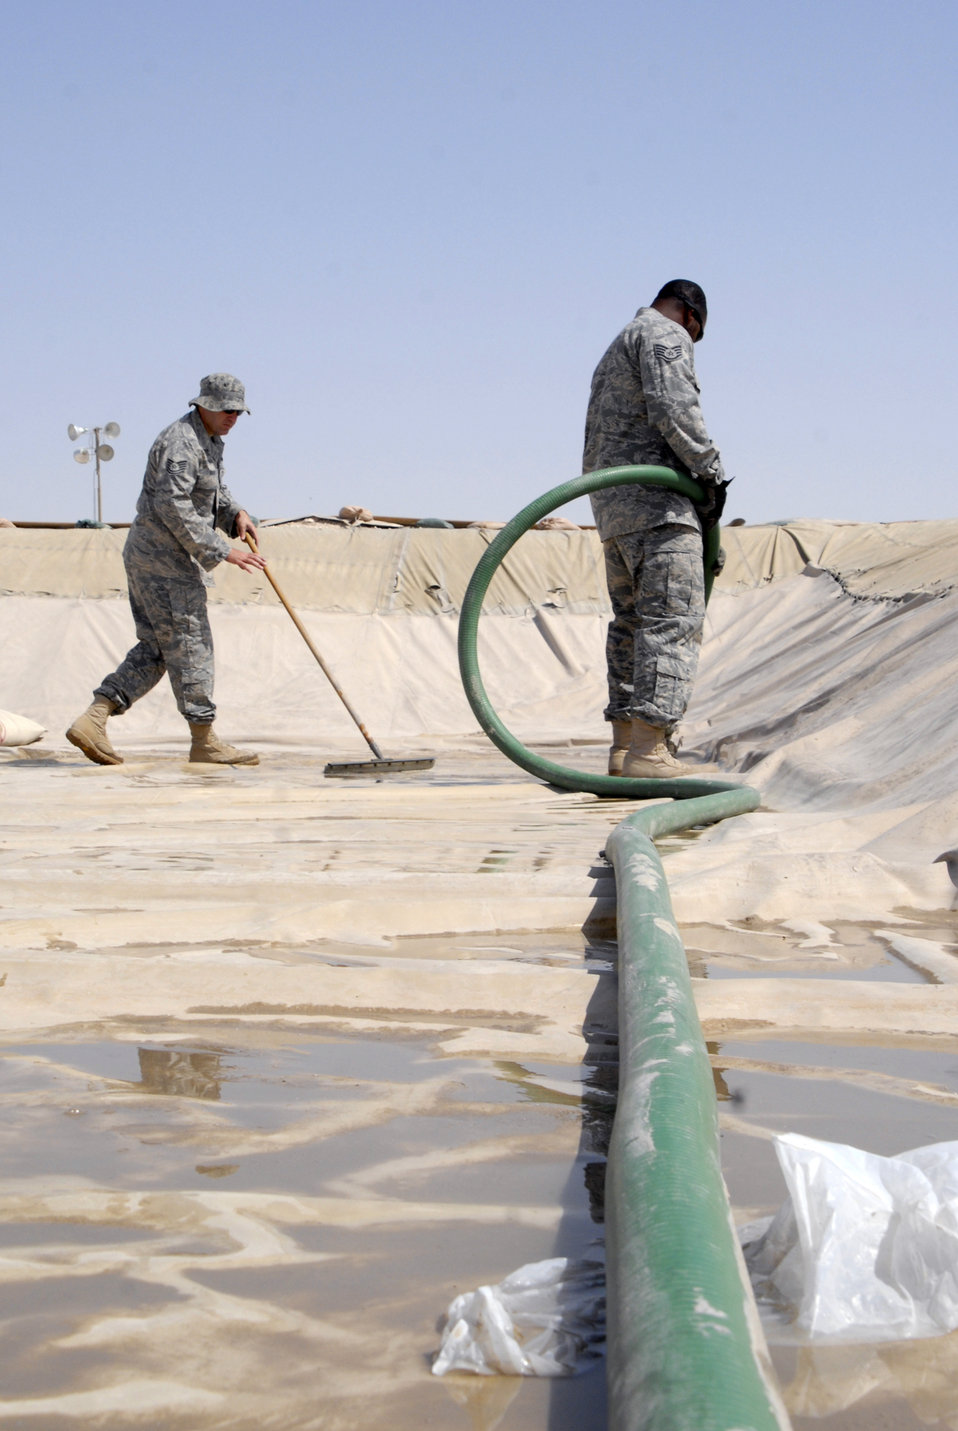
Fueling the way to mission success

Tech. Sgt. John Neiffer (left) and Staff Sgt. Carmarius Johnson remove water in one of the fuel holding areas April 10 at an air base in Southwest Asia as a part of their preventative maintenance procedures. Fuel stored here is distributed to various locations around the base where needed to ensure mission success. Sergeant Neiffer is the 379th Expeditionary Logistics Readiness Squadron NCO in charge of the bulk expeditionary receiving transportation holding area and hails from Pottstown, Pa. He is deployed from Offutt Air Force Base, Neb. Sergeant Johnson, a bulk storage operator with the 379th ELRS, hails from Shreveport, La., and is deployed from Altus AFB, Okla.